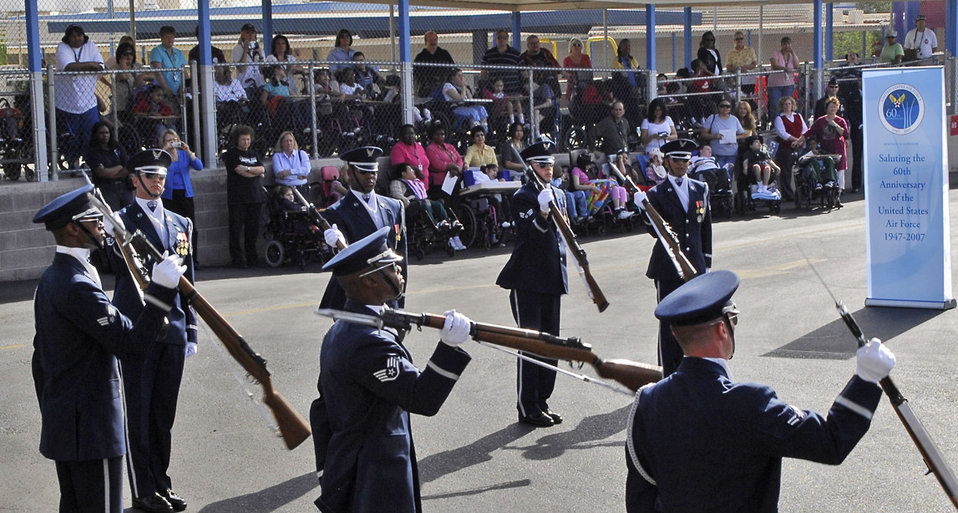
Honor Guard drill team performs for special-needs students

Members of the Air Force Honor Guard drill team perform at the John F. Miller School for Special Needs Nov. 8 in Las Vegas. The drill team planned a special performance for the students at the school during their visit to the city and Nellis Air Force Base, Nev., for the final week of the Air Force's 60th Anniversary celebrations.